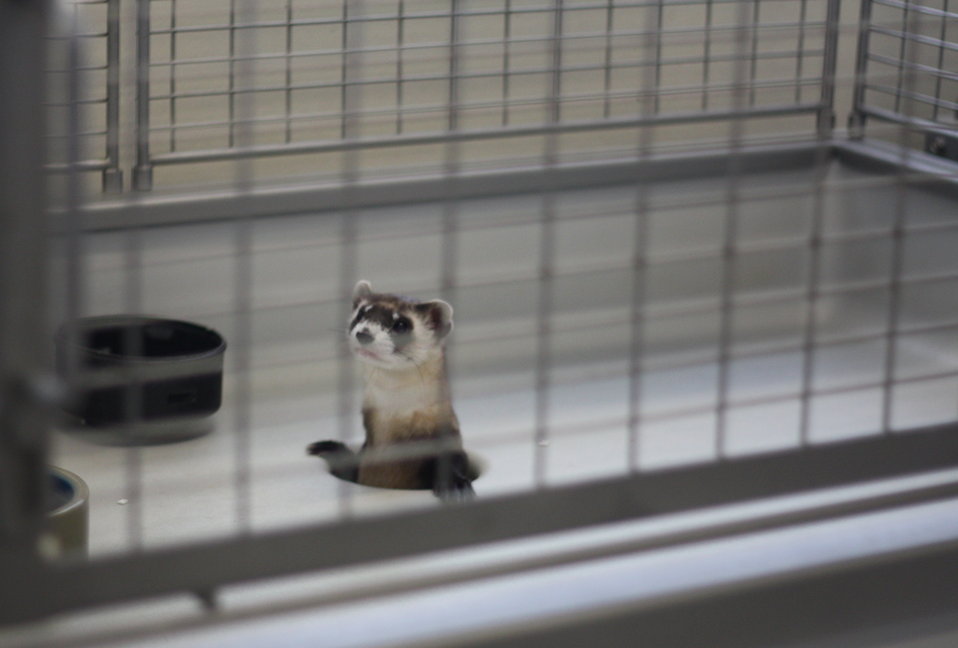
Interns visit the NBFFCC

In the summer of 2012, USFWS Region 6 interns visited the National Black-footed Ferret Conservation Center (NBFFCC) in Colorado to learn how the program reintroduces the endangered Black-footed ferret back into its native habitat.